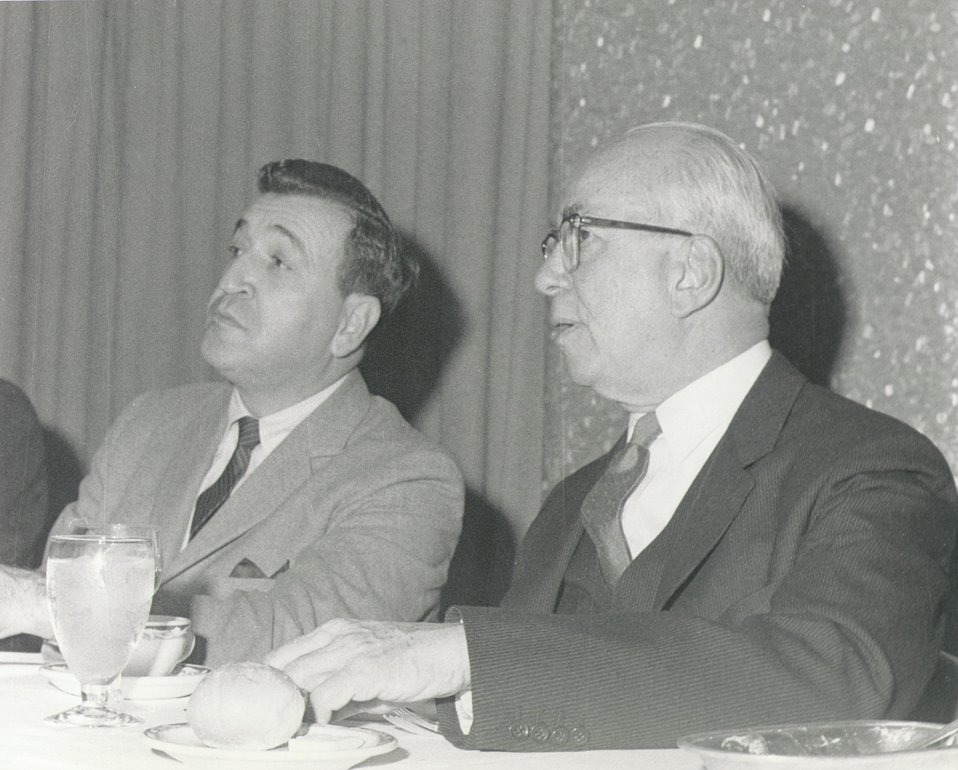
Fermi Award Ceremony for Teller in 1962.